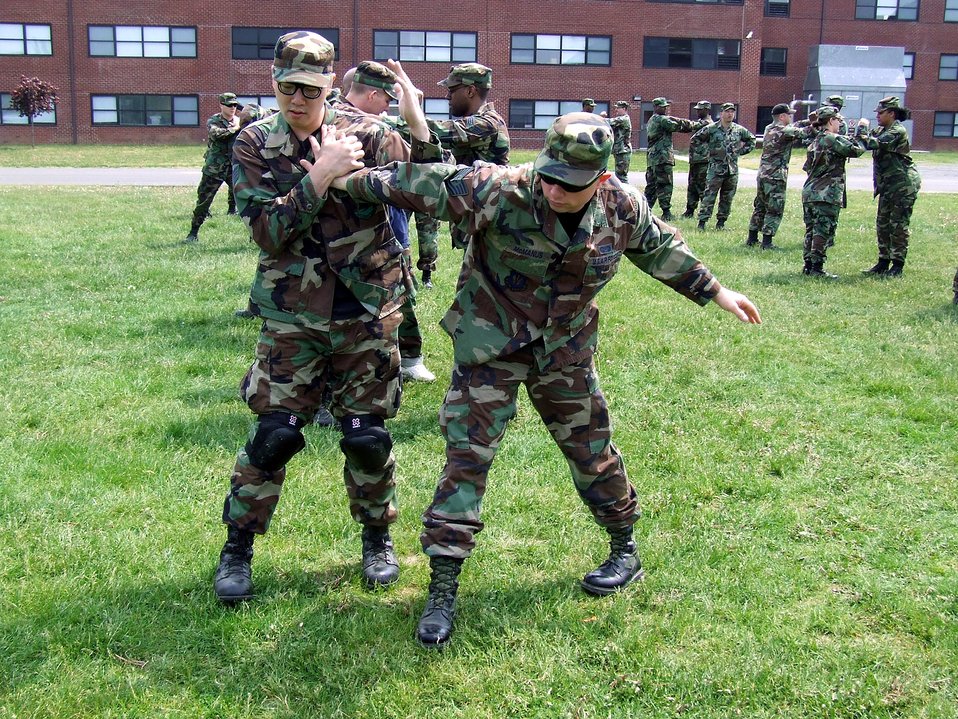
Self defense course kicks way into training

Students in the Advanced Contingency Skills Training Course practice one of the moves in Linear Infighting Neural-override Engagement, or LINE, training during a class session May 16 at the U.S. Air Force Expeditionary Center on Fort Dix, N.J. LINE training is one of the newest training techniques offered to ACST students at the center's 421st Combat Training Squadron.